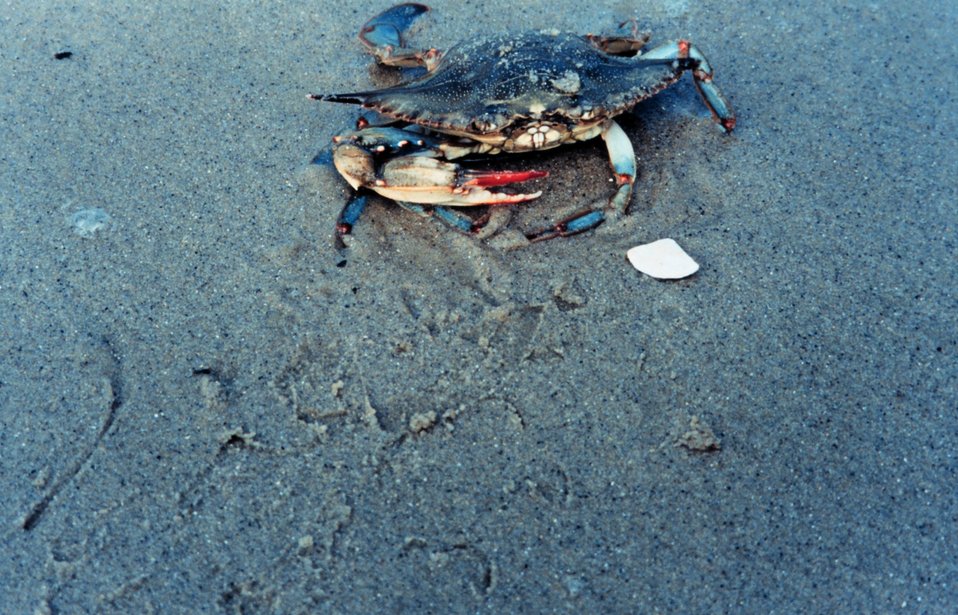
Female blue crab (Callinectes sapidus) on the beach. Females can be distinguished by the right red tips on their claws.